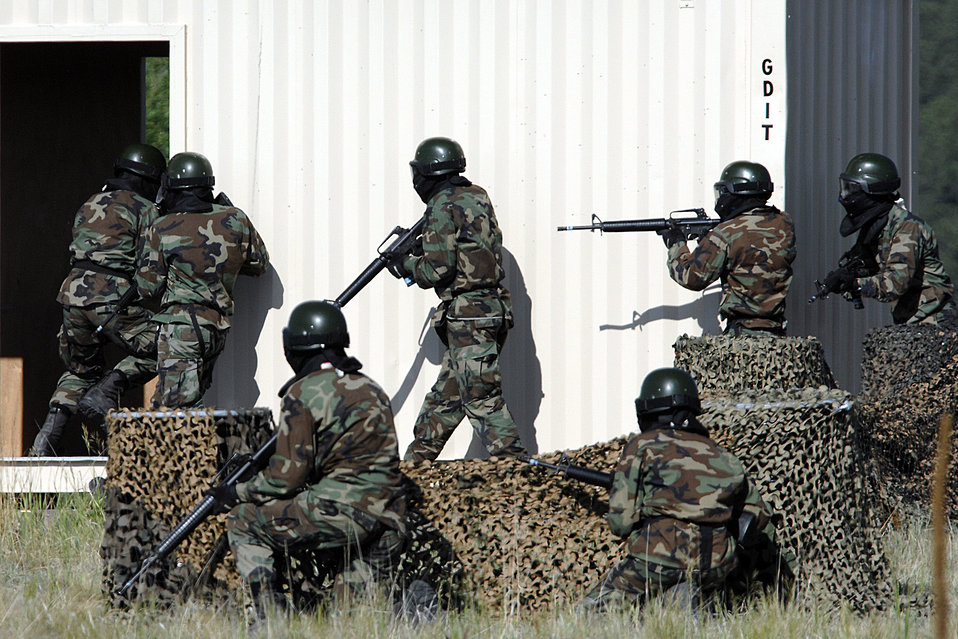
Global Engagement readies Academy cadets for future

The Global Engagement assault team readies to enter the Military Operations Urban Terrain village during the 71-day summer training schedule June 18 at the U.S. Air Force Academy in Colorado. Approximately 1,200 Academy cadets are going through intensive training this summer to be ready to be globally engaged when they graduate.